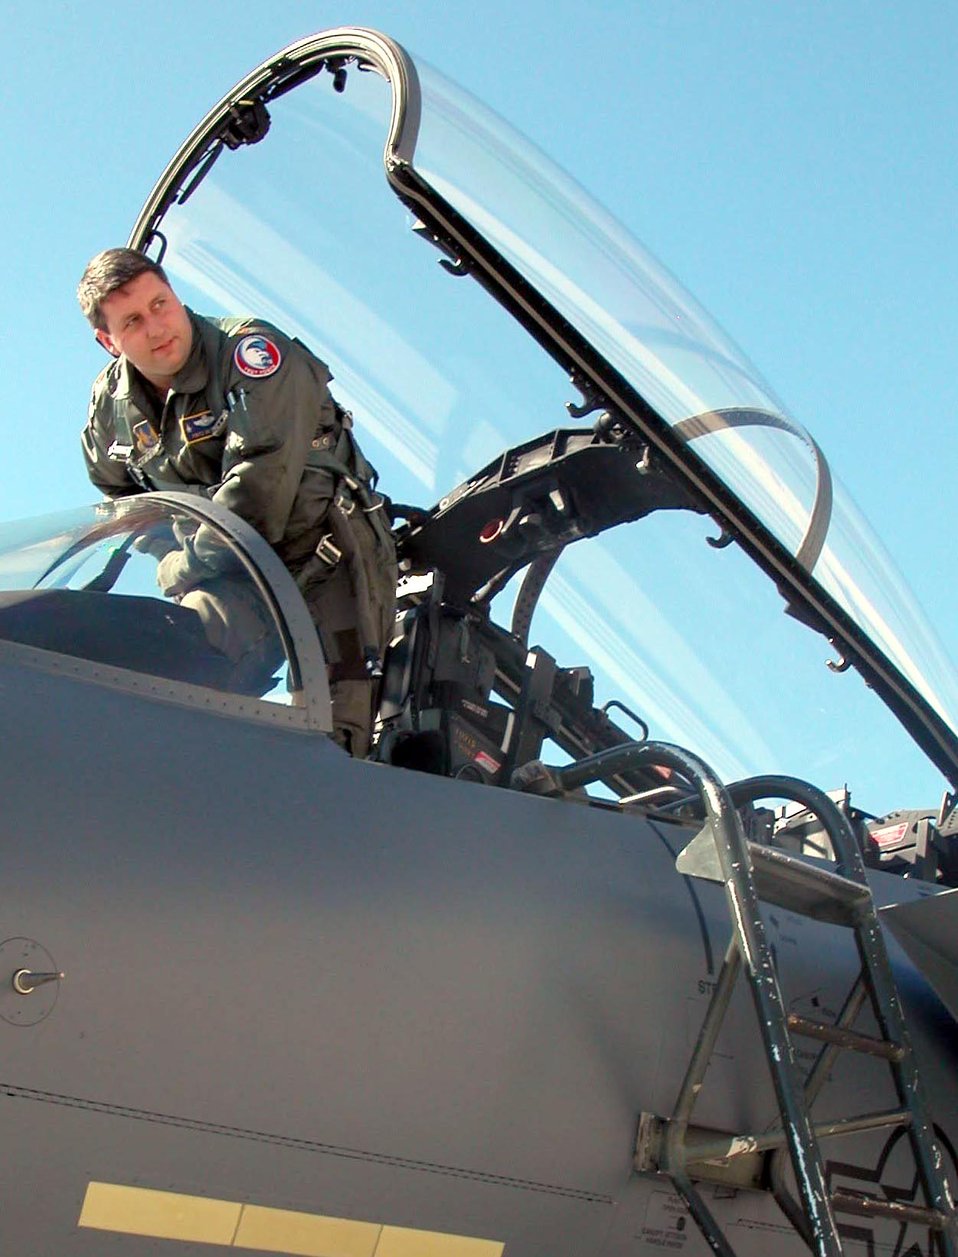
Heck

ROBINS AIR FORCE BASE, Ga. -- Maj. Fritz Heck, 339th Flight Test Squadron, exits an F-15 Eagle. He praised the craftsmanship of the F-15 canopy shop here, which repairs flaws in F-15 canopies and windscreens.